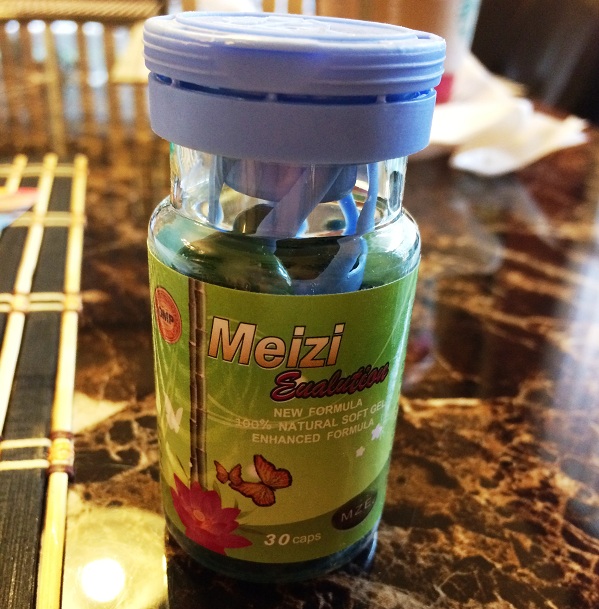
RECALLED - Reduce Weight Fruta Planta

February 4, 2014 – Product Recall – MyNicKnaxs, LLC. Issues a Voluntary Nationwide and International Recall of All Weight Loss Formulas of Reduce Weight Fruta Planta.